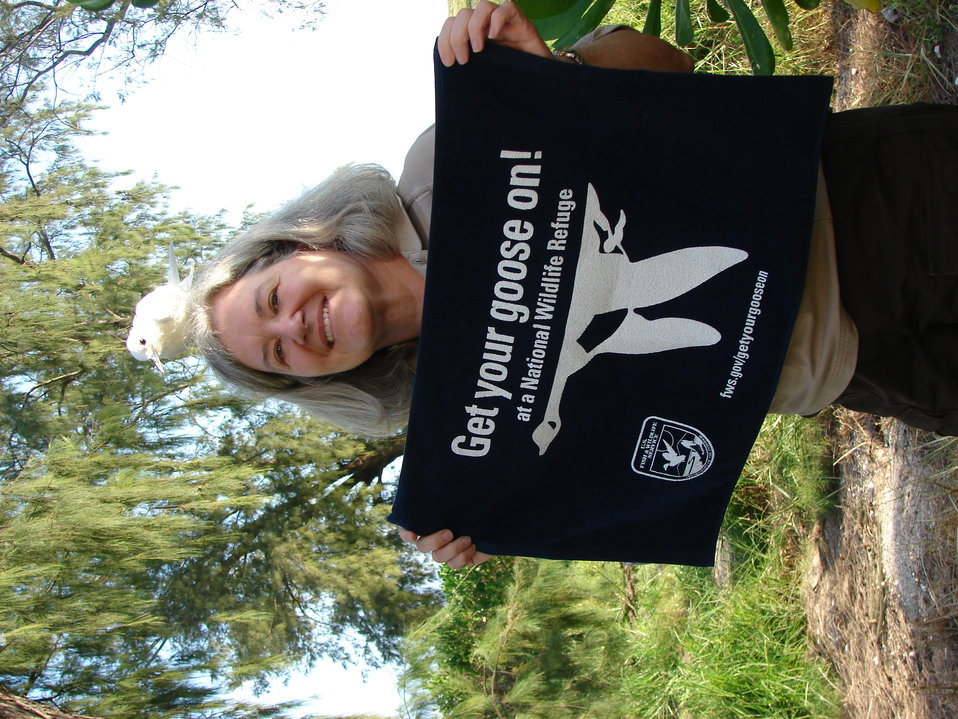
Get Your Goose On! - Pacific Atoll Style!

Midway Atoll National Wildlife Refuge staff take a break from feeding abandoned fledging white terns to Get Their Goose On!